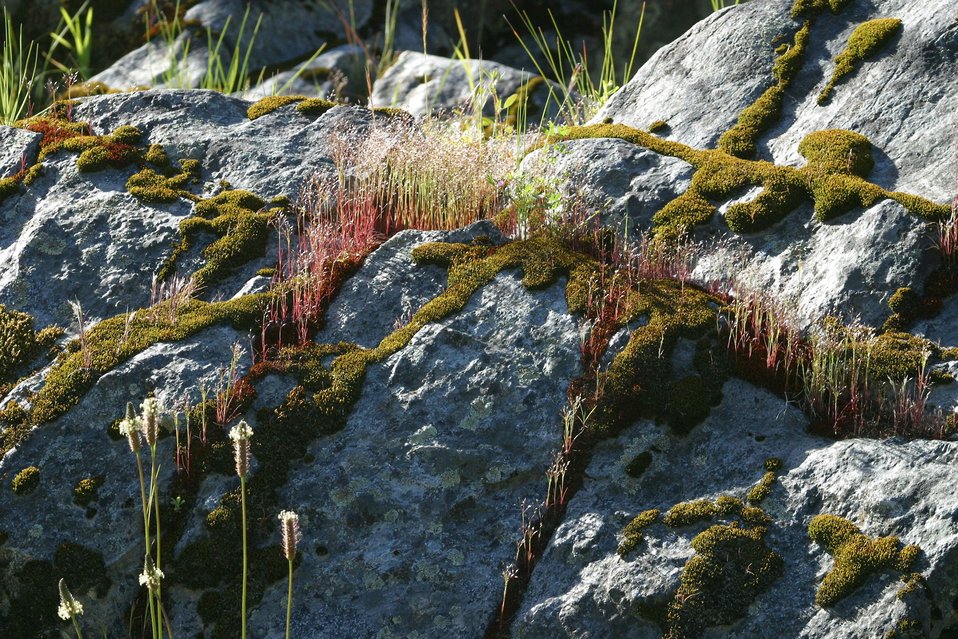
Wild section of the Rogue River from Grave Creek to Foster Bar May 19 to May 22.